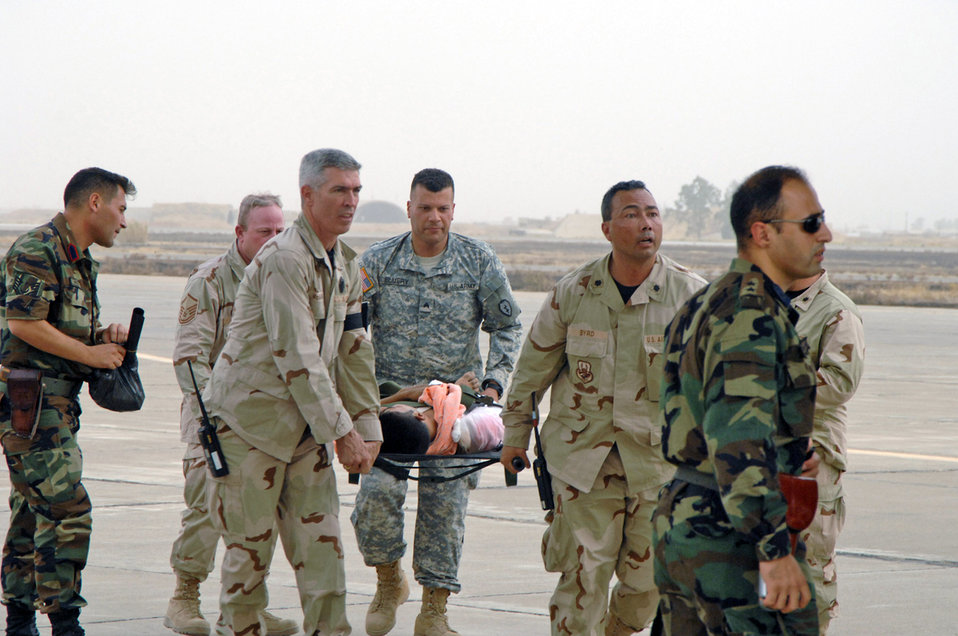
Airmen lead multinational effort for Iraqi bombing victims

Lieutenant Colonels Gerald McManus (center left) and Richard Byrd, Master Sgt. Joseph Rose (center back left) and Army Sgt. Ramy Elmery (center) carry a vehicle borne improvised explosive device victim to a Turkish airplane July 8 at Kirkuk Air Base, Iraq. The victim was hurt in the July 7 market bombing in Tuz Khurmato, Iraq. Airmen from the 506th Air Expeditionary Group worked with Iraqi medical providers and Turkish army and air force members to receive, transfer and aerovac almost 30 injured Turkmen civilians and family members to the Turkish capital city of Ankara for further treatment.